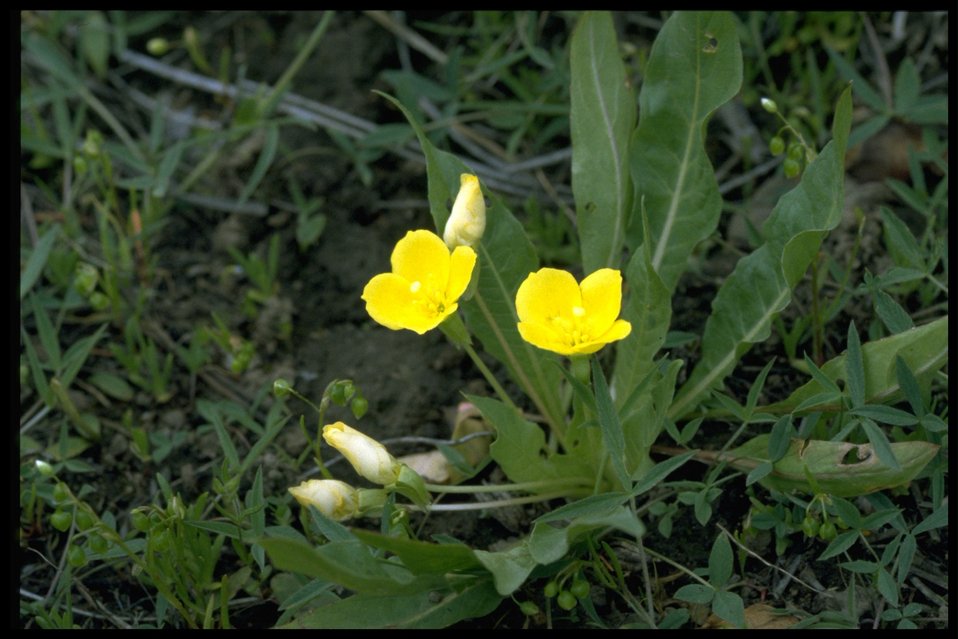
Medium shot of diffuseflower evening-primerose (Camissonia subacaulis).